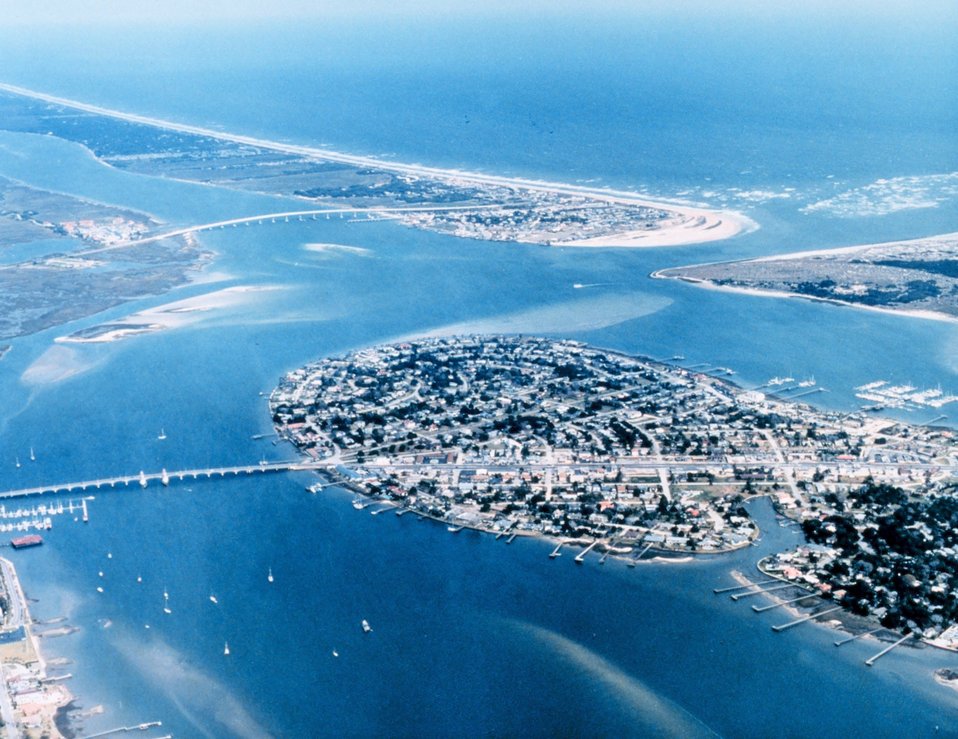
2951 North Latitude 8116 West Longitude.